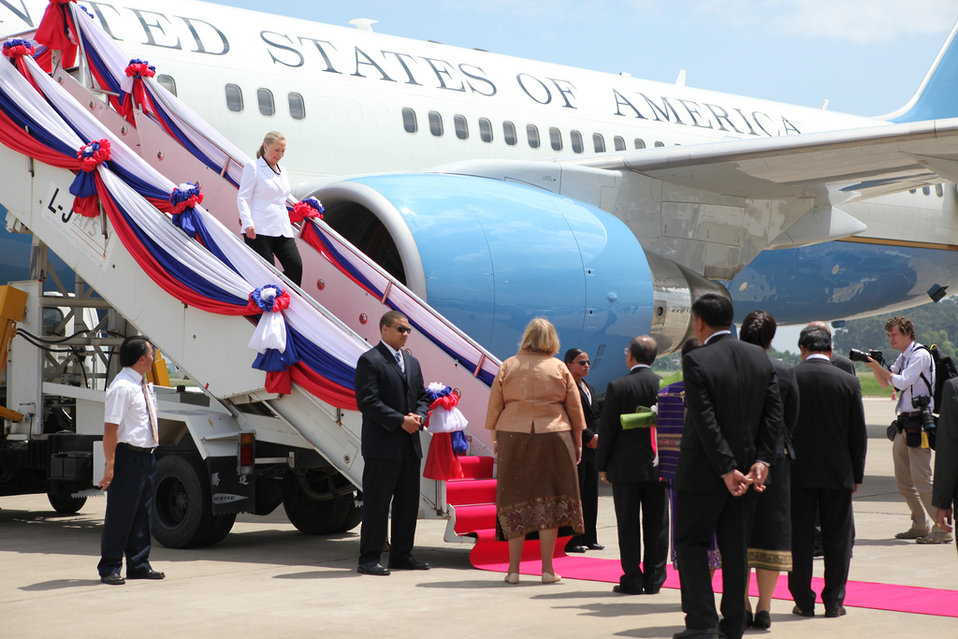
Secretary Clinton Arrives in Laos

U.S. Secretary of State Hillary Rodham Clinton arrives at Wattay International Airport in Vientiane, Laos, on July 11, 2012.